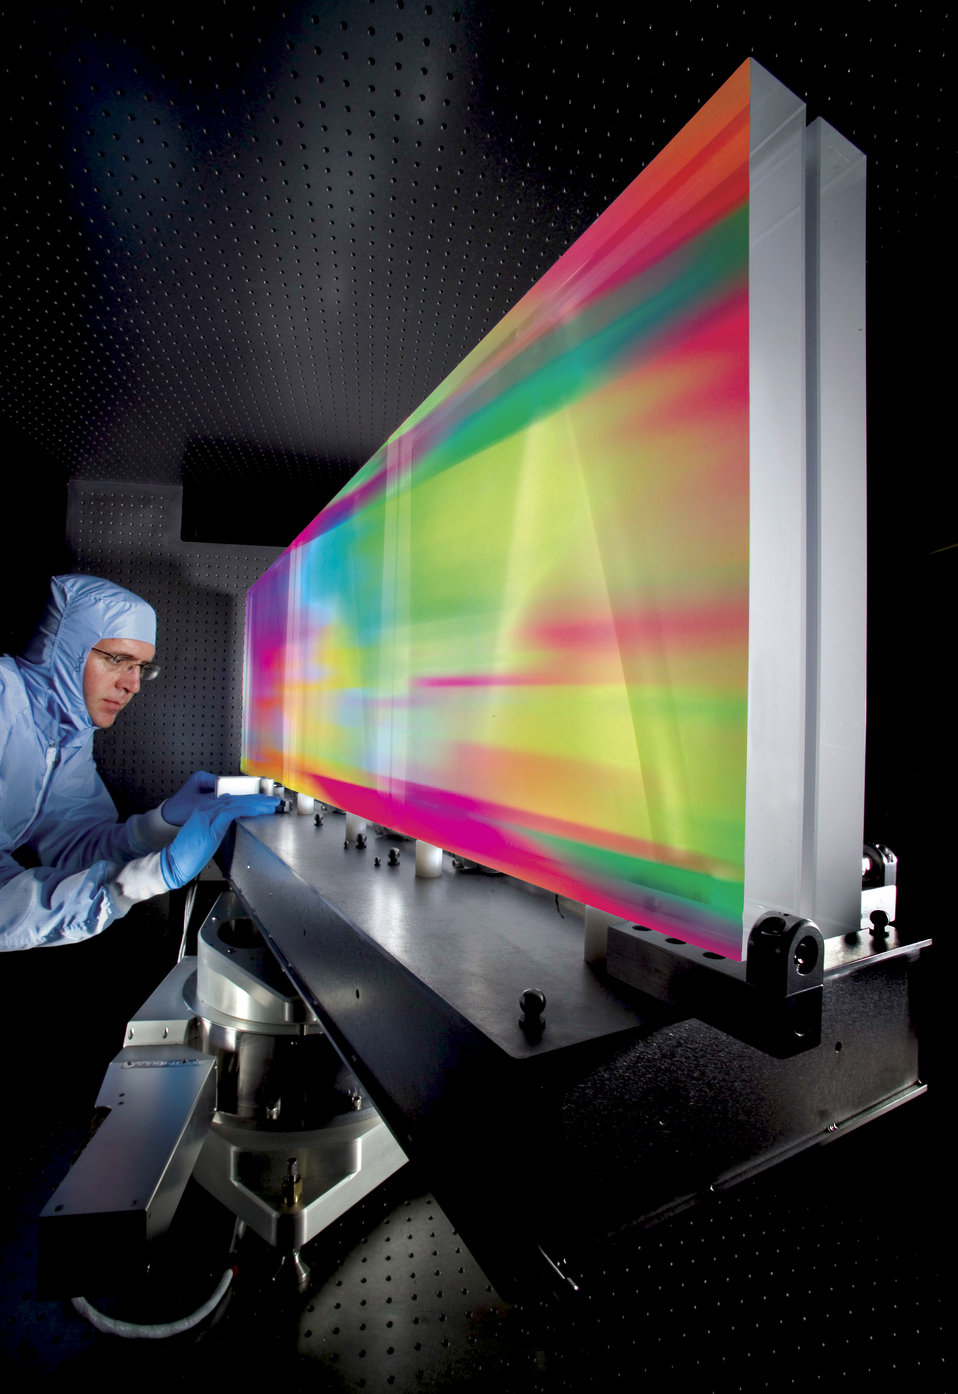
The coherent addition of multiple gratings to form a larger grating provides an alternative to meter-sized multilayer dielectric (MLD) gratings. This concept has been developed for the OMEGA EP grating compressors. A laboratory for laser Energetic ( LLE) research engineer is aligning a full size OMEGA EP tiled-grating assembly ( TGA).